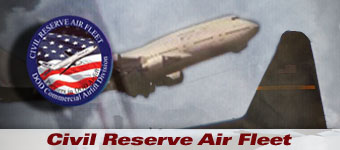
Civil Reserve Air Fleet history spotlight graphic .